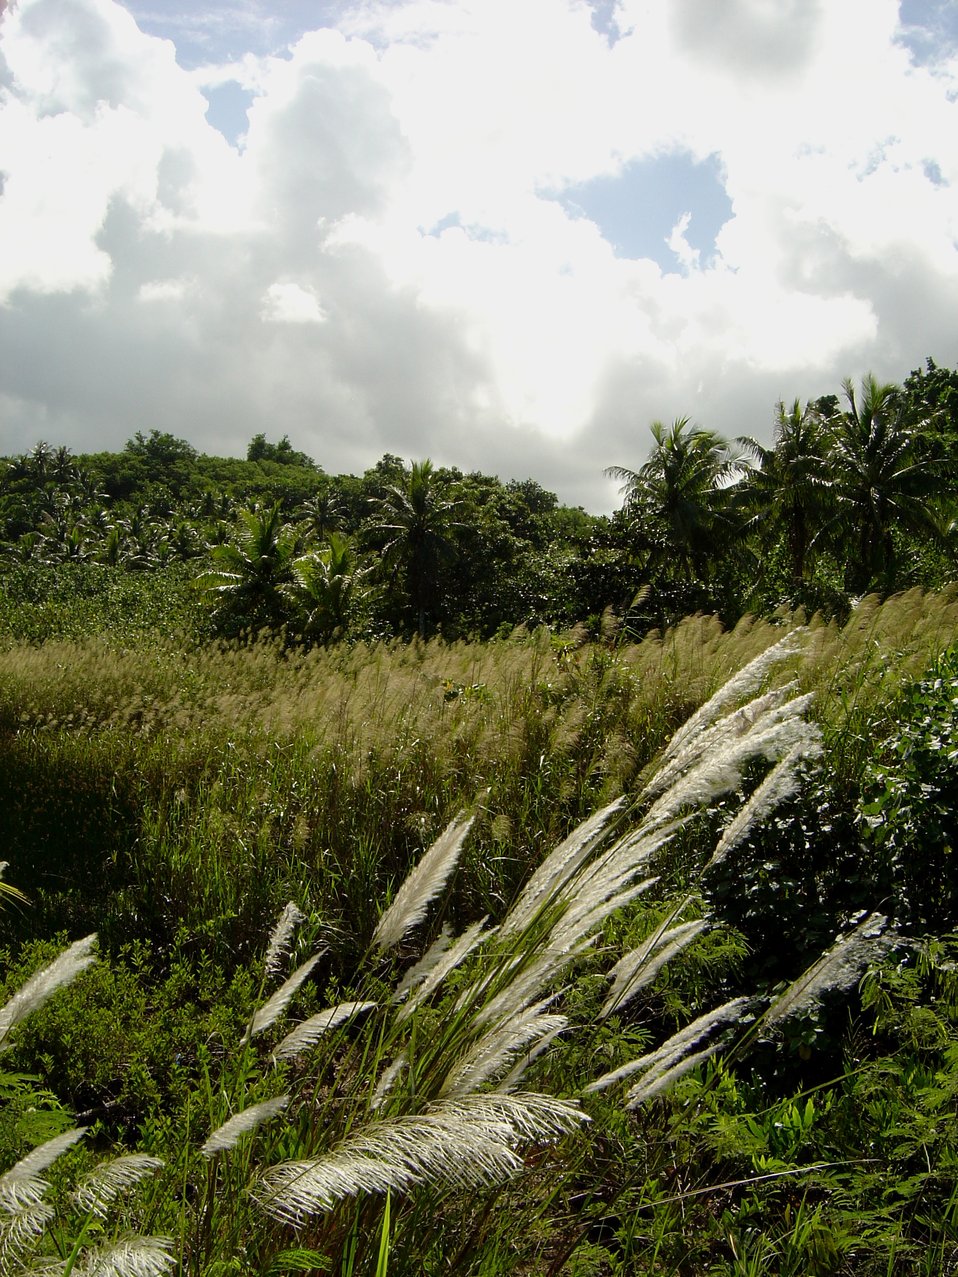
Phragmites marshland in wetlands of Guam.